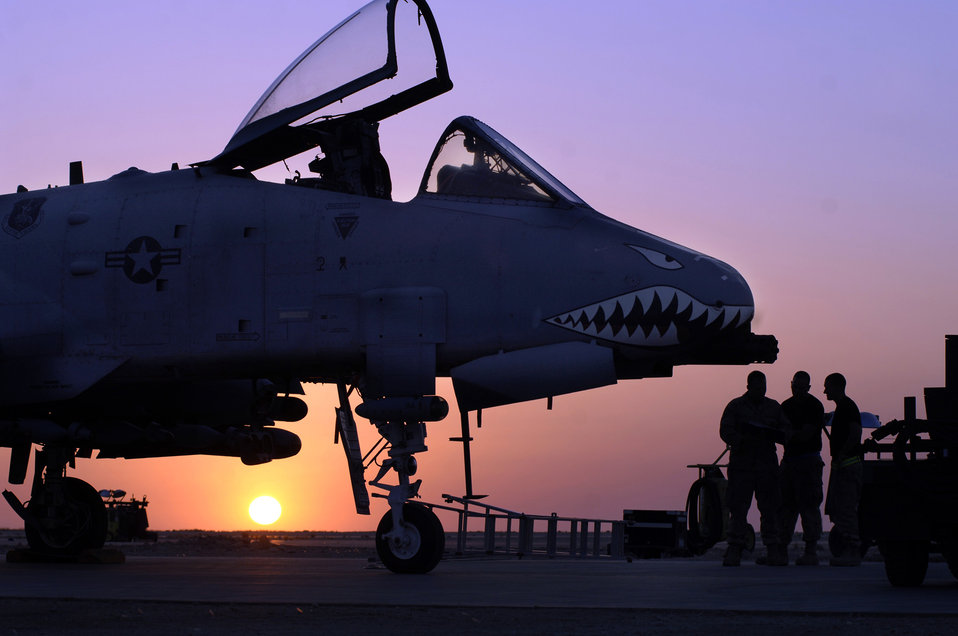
Trouble shooting

Senior Airman Joseph Cordero, Staff Sgt. Andrew House and Staff Sgt. Barrett Read trouble shoot an electronic error on an A-10 Thunderbolt II April 25 on the flightline at Al Asad Air Base, Iraq.